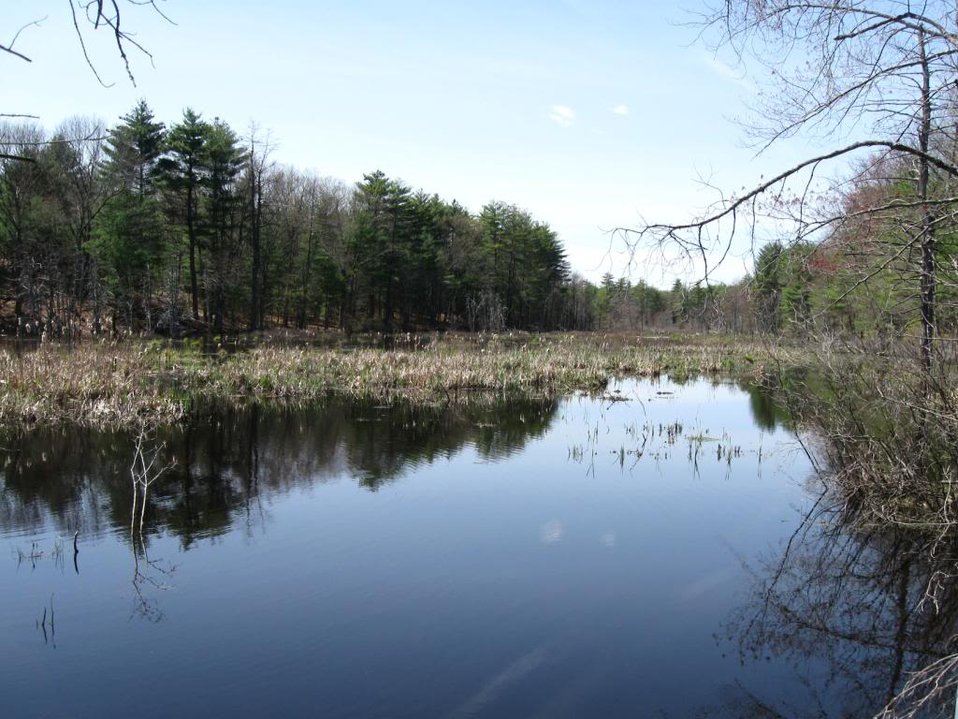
Assabet River National Wildlife Refuge.

Credit: Zachary Cava/USFWS

Assabet River National Wildlife Refuge is part of the Eastern Massachusetts National Wildlife Refuge Complex.